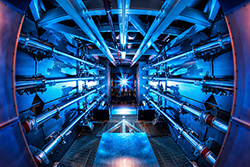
The National Ignition Facility at Lawrence Livermore National Laboratory made an historic record-breaking laser shot on July 5, 2012. The NIF laser system of 192 beams delivered more than 500 trillion watts (terawatts or tw) of peak power and 1.8 megajoules (Mj) of ultraviolet laser light to its target.